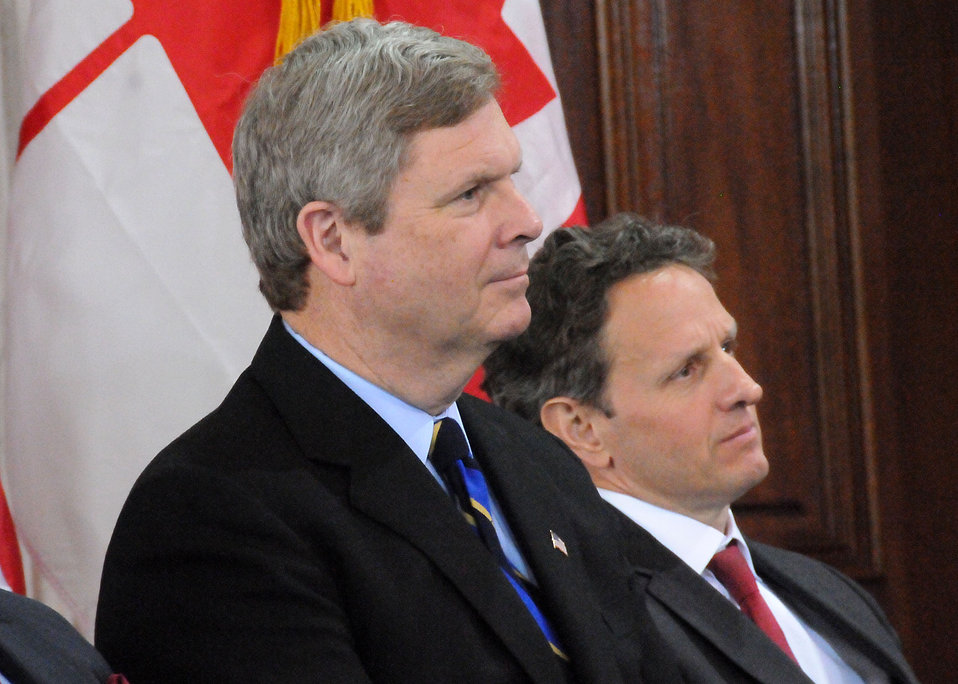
Agriculture Secretary Tom Vilsack (left) and Treasury Secretary Tim Geithner listen to remarks by Co-chair of the Bill and Melinda Gates Foundation Bill Gates at the Strengthening Global Food Security conference held at the Treasury Department in Washington, D. C., on Thursday, April 22, 2010. USDA photo 10di1325-253